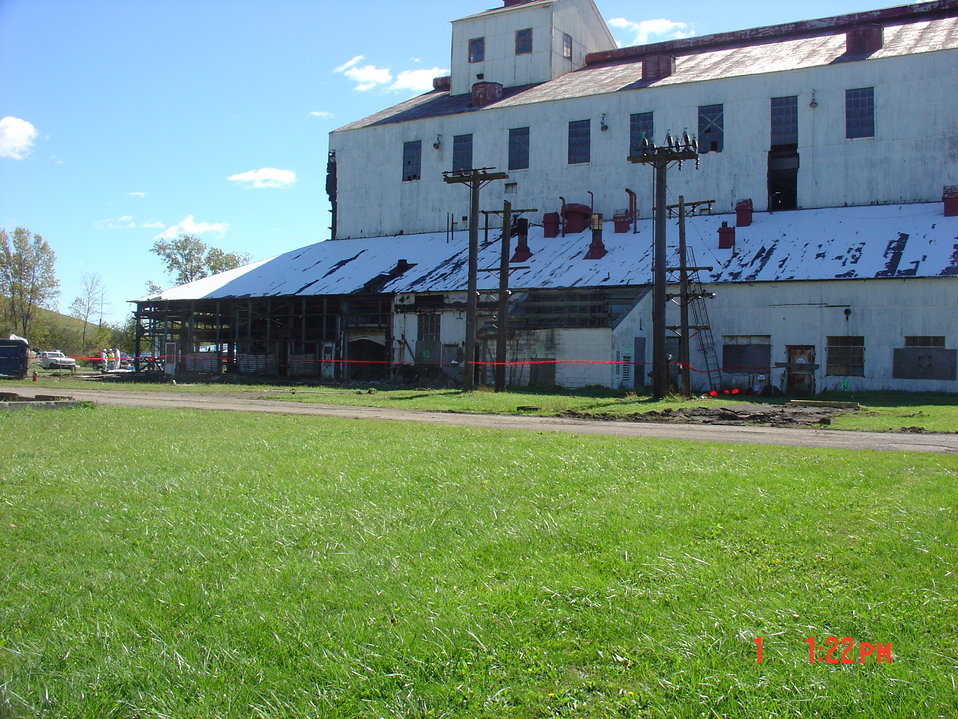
BLDG 401 SIDING REMOVED

Activities from the Niagara Falls Storage Site, which is associated with the former Lake Ontario Ordnance Works. Formerly Utilized Sites Remedial Action Program (FUSRAP), a program initiated in 1974 to identify, investigate and clean up or control sites that were part of the Nation's early atomic energy and weapons program. Activities at the sites that are eligible for FUSRAP were conducted by Manhattan Engineer District (MED) or the Atomic Energy Commission (AEC), both predecessors of the Department of Energy (DOE). The U.S. Army Corps of Engineers was assigned management of FUSRAP by Congress in 1997.